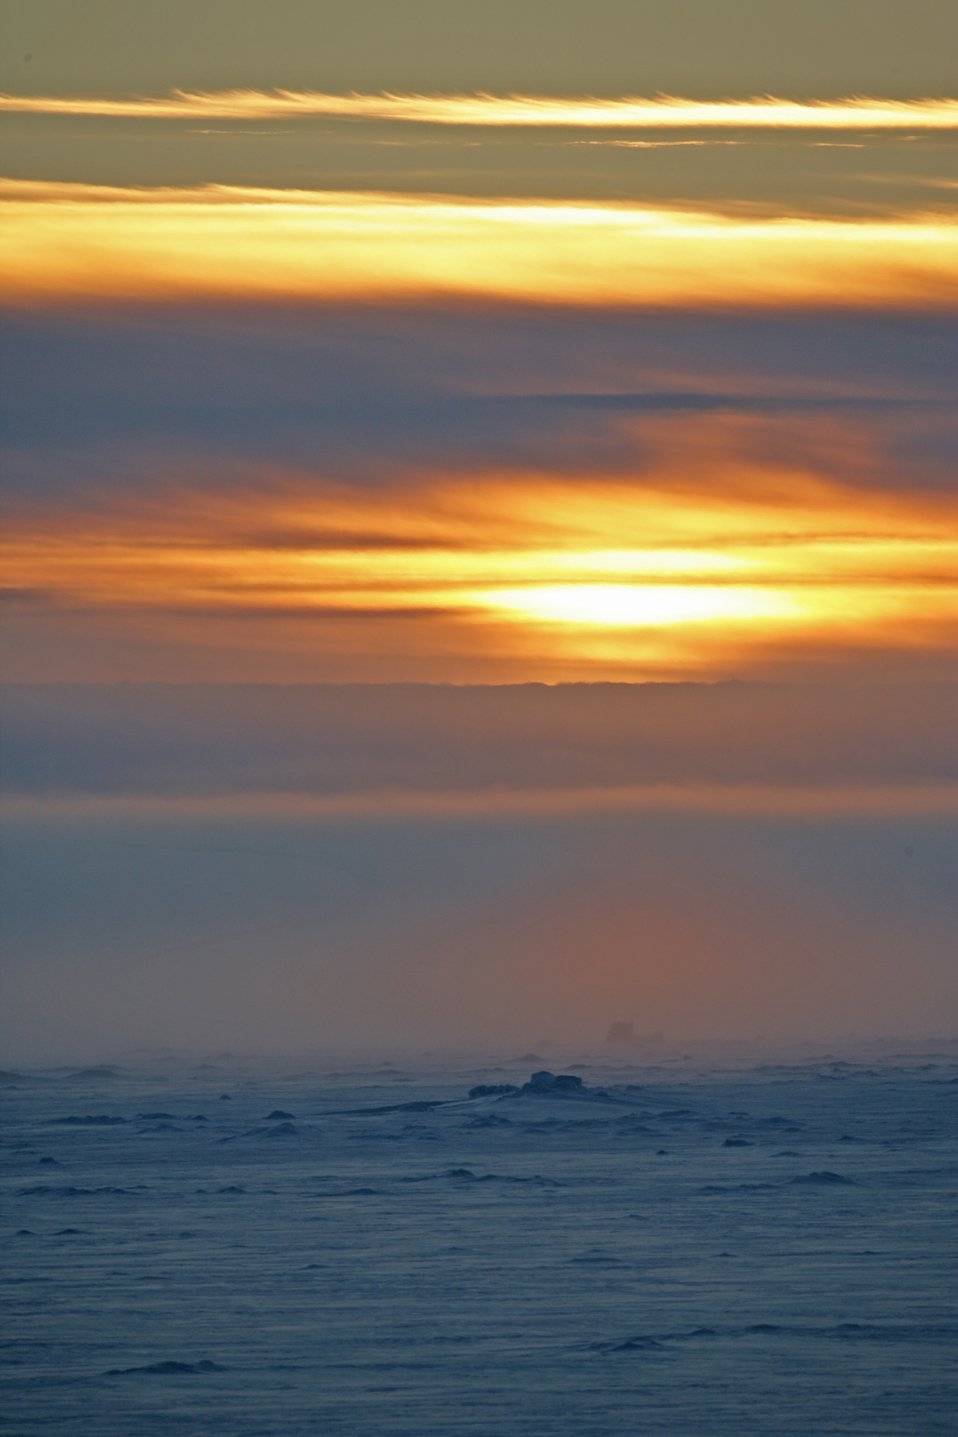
Arctic sunset.